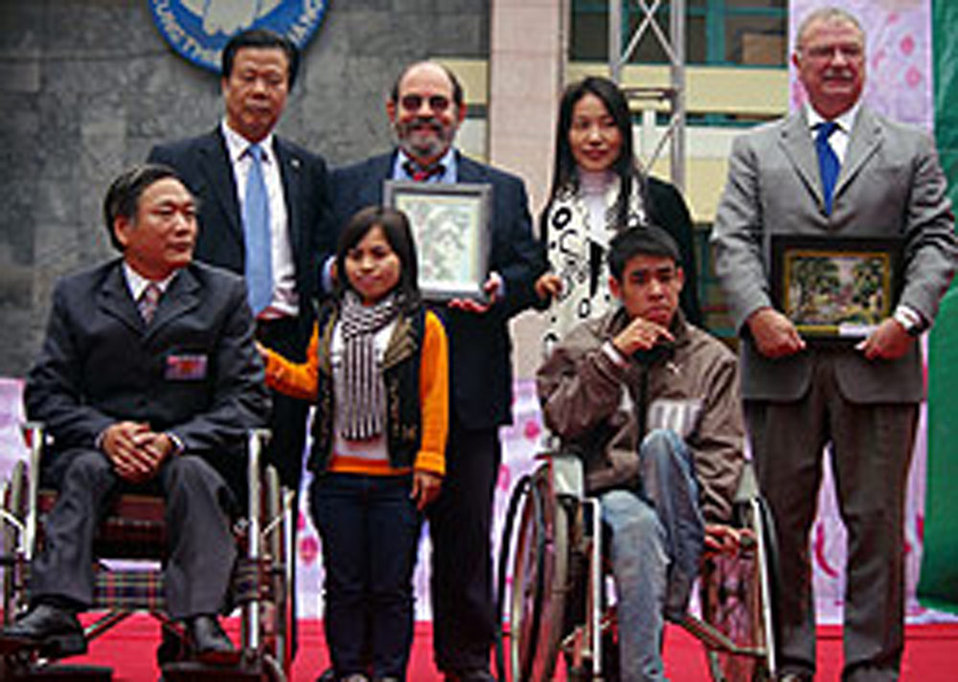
International Day of Persons with Disabilities 2010